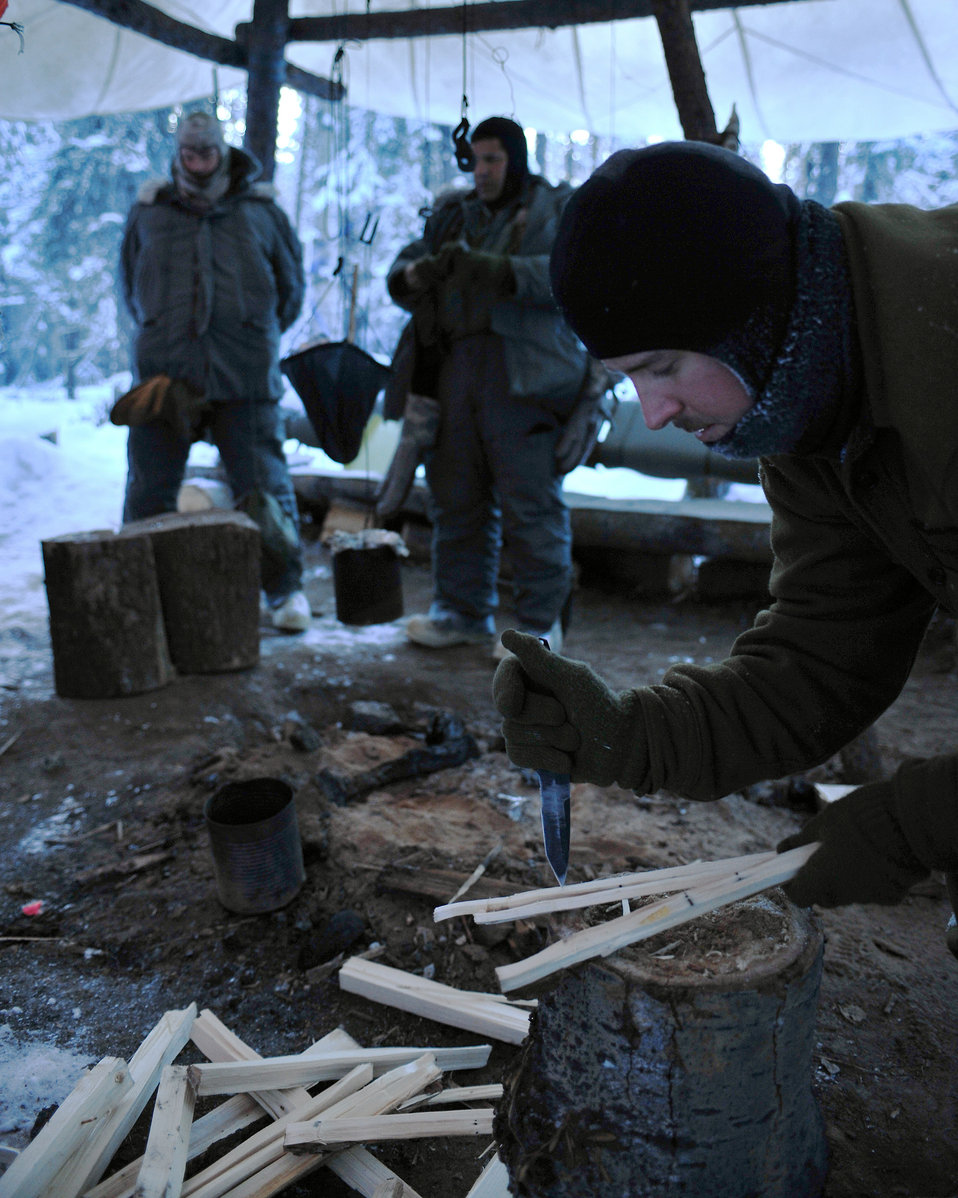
Learning survival skills in 'Cool School'

Senior Airman Chris Walsh splits wood Jan. 28 at Eielson Air Force Base, Alaska. The split wood burns faster and makes starting a fire easier than whole logs. Airman Walsh is an Arctic Survival School instructor.